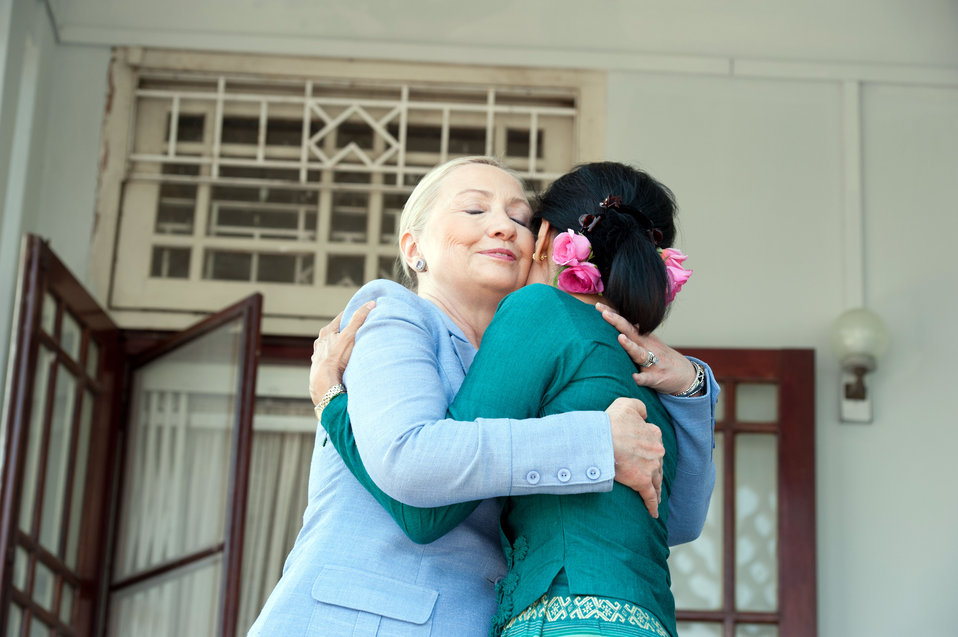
Secretary Clinton Meets With Daw Aung San Suu Kyi

U.S. Secretary of State Hillary Rodham Clinton visits Daw Aung San Suu Kyi at her house in Rangoon, Burma, on December 2, 2011.